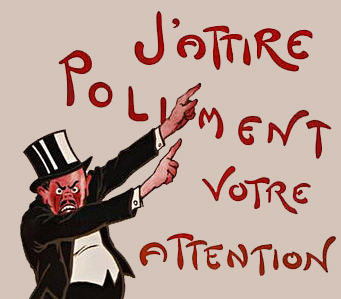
Fran√ßais†: Publicit√© pour la lampe Osram.